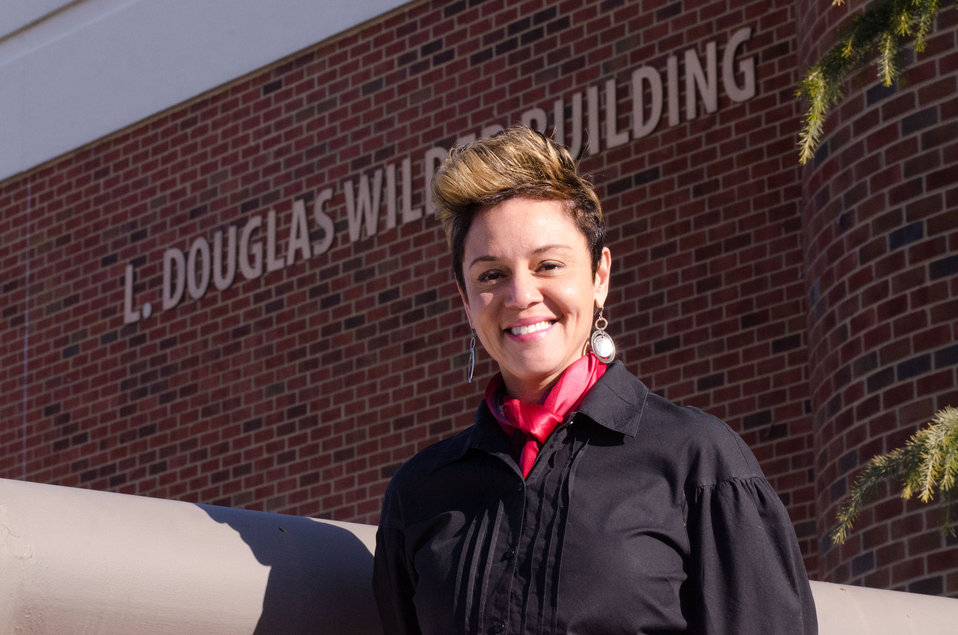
Virginia State University (VSU), School of Agriculture Dean Dr. Jewel E. Hairston was the keynote speaker for the 'VSU/U.S. Department of Agriculture (USDA) and Virginia Farmers Working Together” outreach workshop in the VSU, L. Douglas Wilder building on Thursday, March 7, 2013, in Petersburg, VA. Her topic was 'Small Farming - Persistence Under Pressure.'